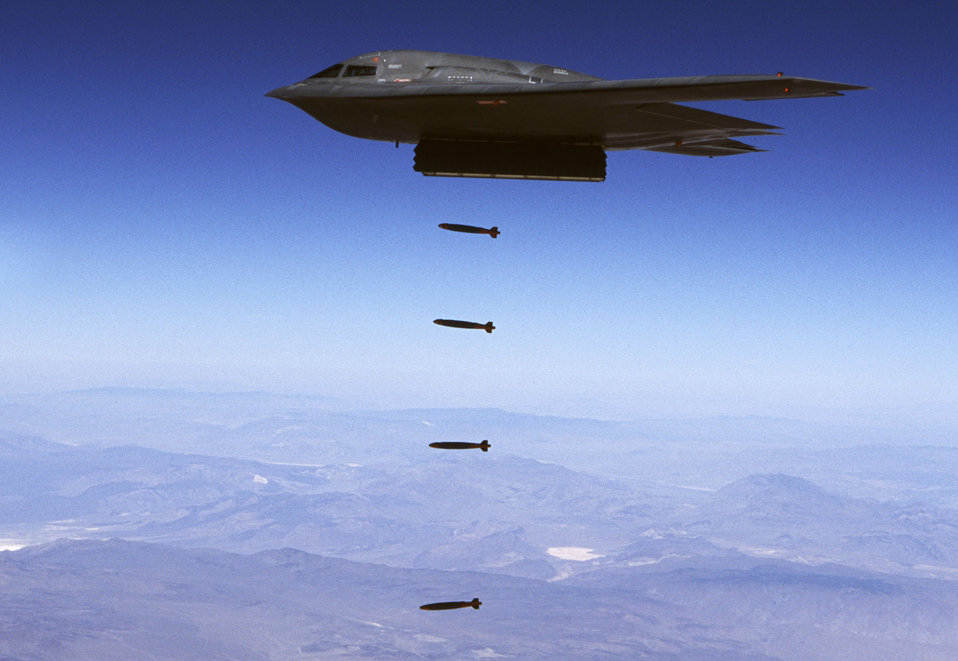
B-2 bomber

HILL AIR FORCE BASE, Utah -- A B-2 Spirit drops 32 inert Joint Direct Attack Munitions Aug. 27 at the Utah Testing and Training Range here.